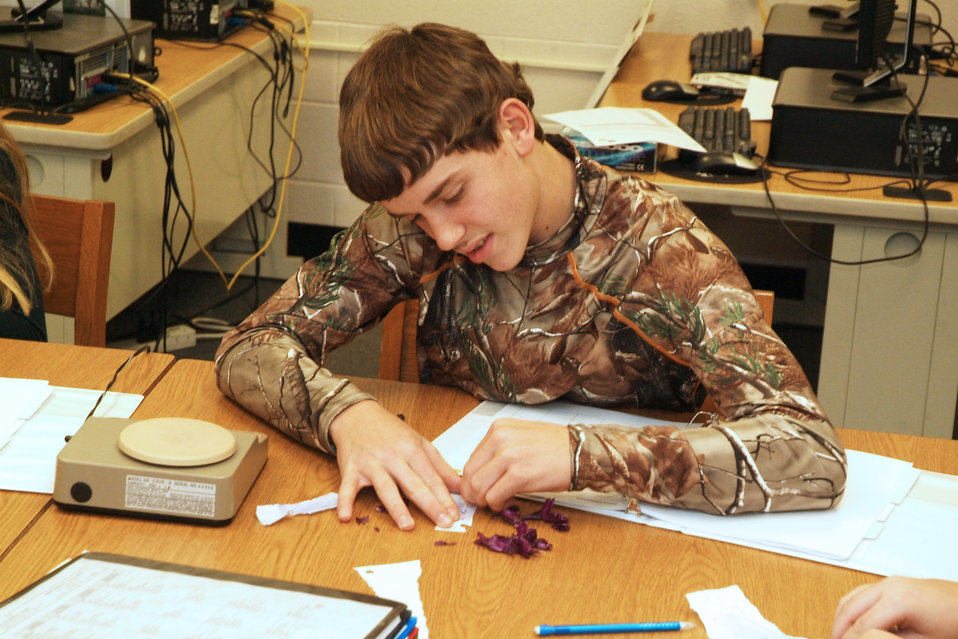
Heath Middle School Science Project Ongoing at Paducah Site

Heath Middle School eighth-grader Travis Crouch performs a pH (acidity-basicity) test using red cabbage.

Twenty-six of Heath Middle School’s brightest science students spent the 2011-12 school year helping DOE try to resolve a real environmental issue at the Paducah site.

Mentors assigned to each grade — sixth, seventh, and eighth — taught students investigative techniques as the school year progressed. The students used data and information to produce a presentation with tables, graphs, and charts. Three groups of students, representing their respective grades, presented their findings and recommendations April 20, 2012.